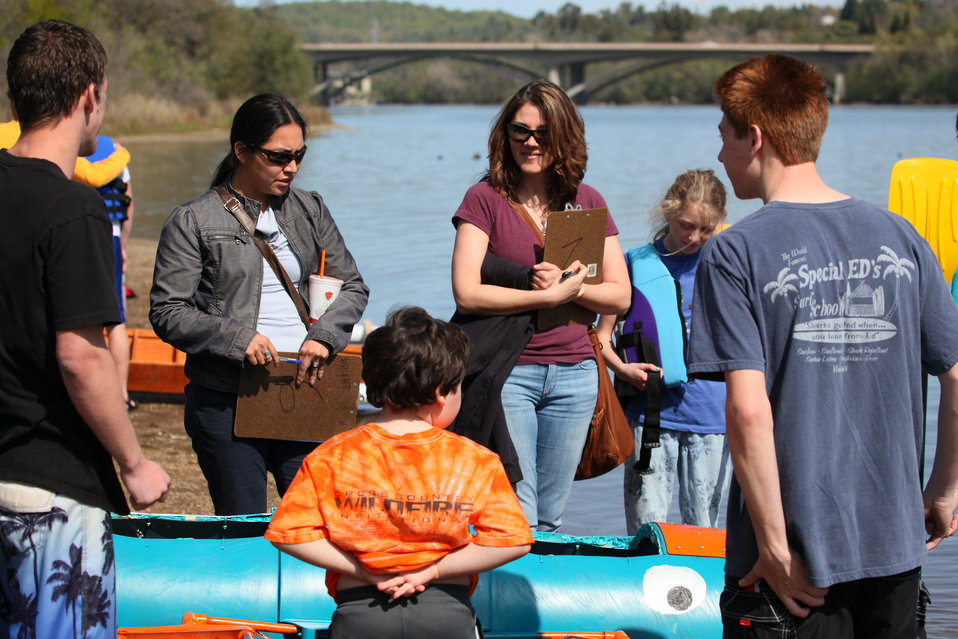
Judging boat regatta entrants for design and construction

Zeffy Ruvalcaba (center) and Fiorella Fuentes (second from left) of the U.S. Army Corps of Engineers Sacramento District examine a boat with students at the 5th Annual Folsom High School Boat Regatta competition at Lake Natoma in Folsom, Calif., March 23, 2012. Ruvalcaba and Fuentes, along with Arianna Raymundo, helped judge boats designed and built by students for their science class project. Following the on-shore judging the boats were put to the test on the cold waters of Lake Natoma, where students used their creations to compete in drag and slalom races while trying not to sink.